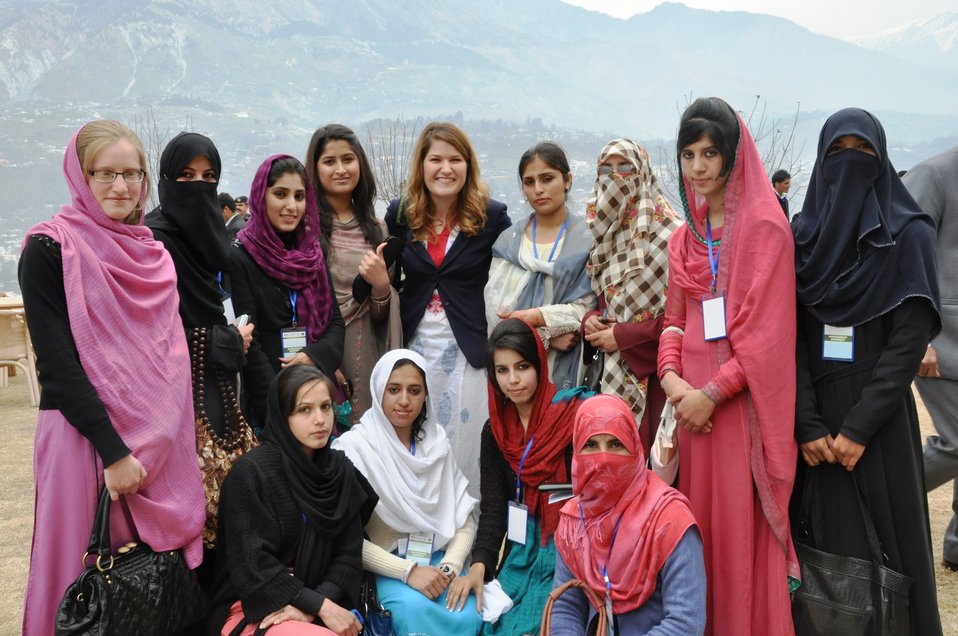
Scholarship recipients in a group photo with the USAID's representative